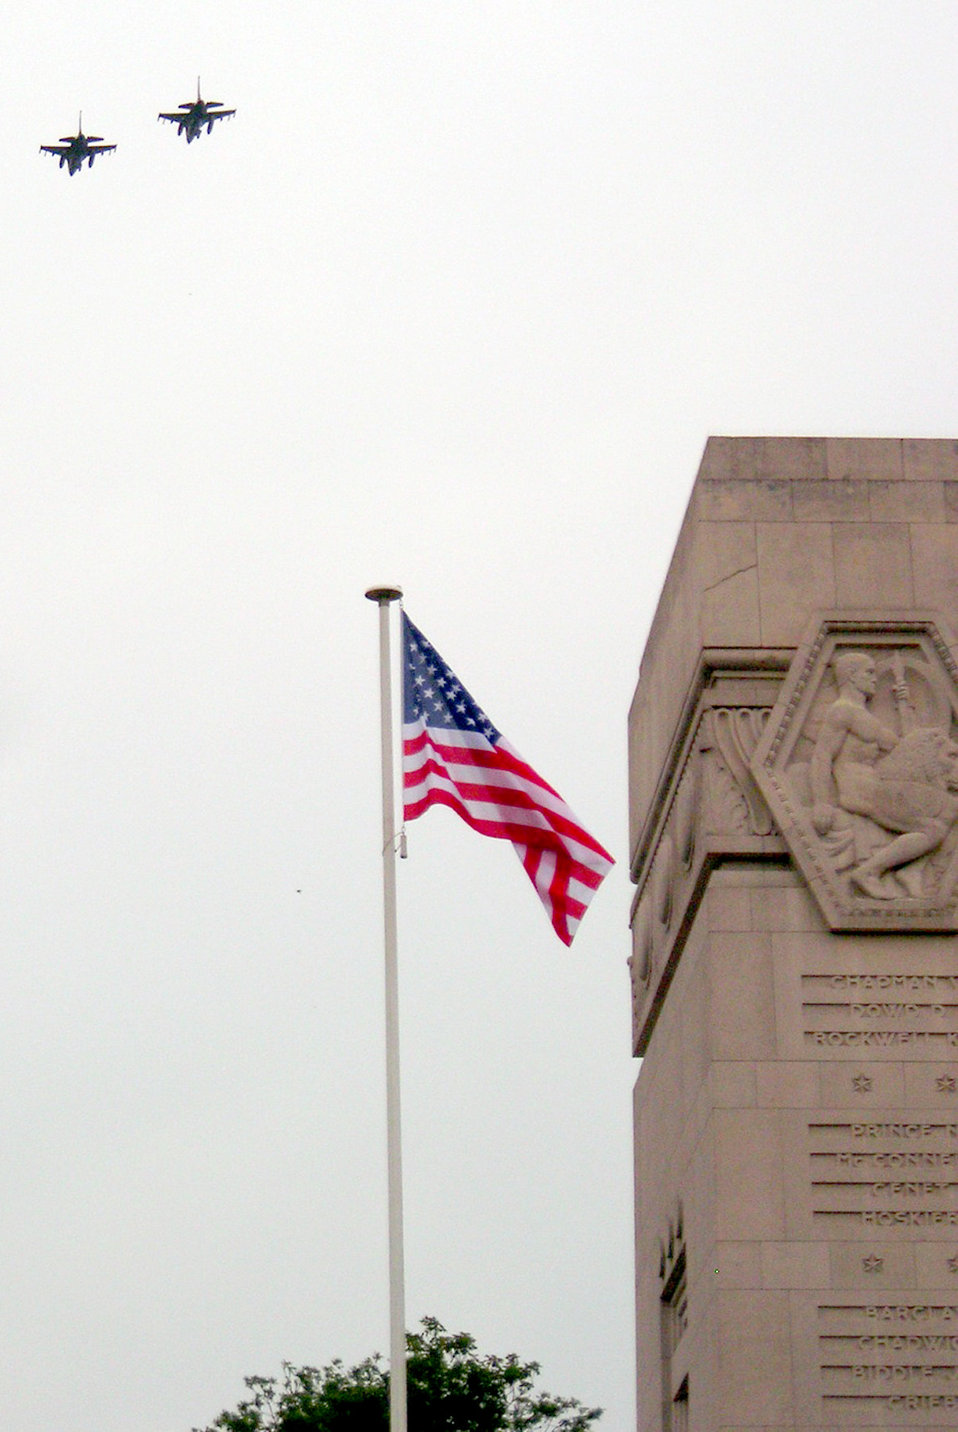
U.S., French remember America's first combat pilots

F-16 Fighting Falcon aircraft from the 52nd Fighter Wing at Spangdahlem Air Base, Germany, flyover the Lafayette Escadrille Memorial outside of Paris, May 27, 2010. The Lafayette Escadrille Memorial is a reminder for all of the American pilots of the Escadrille La Fayette and the Lafayette Flying Corps who died during service to the Allies during World War I.